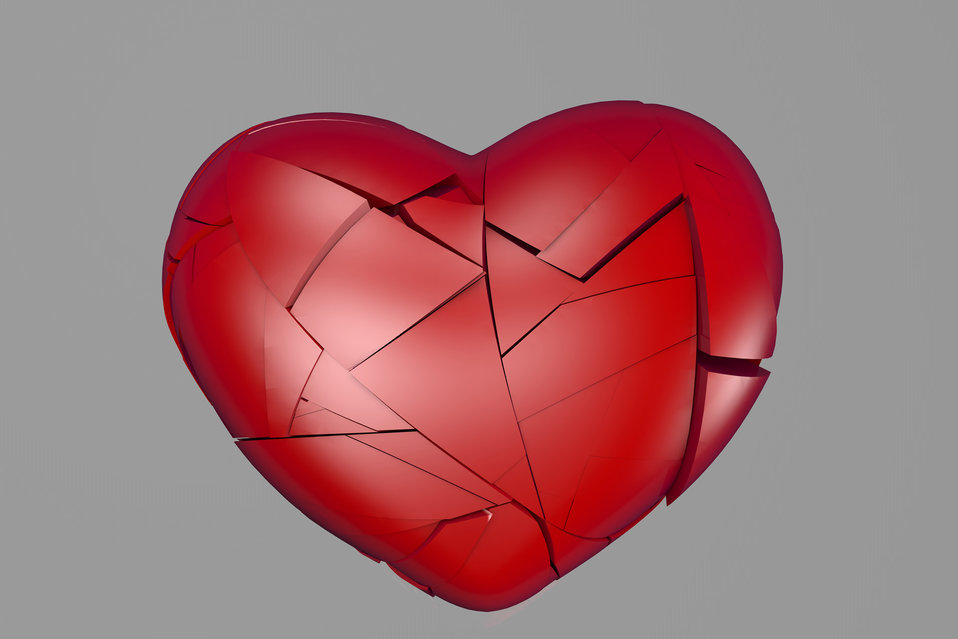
The broken heart

Heart is broken into pieces 300dpi.